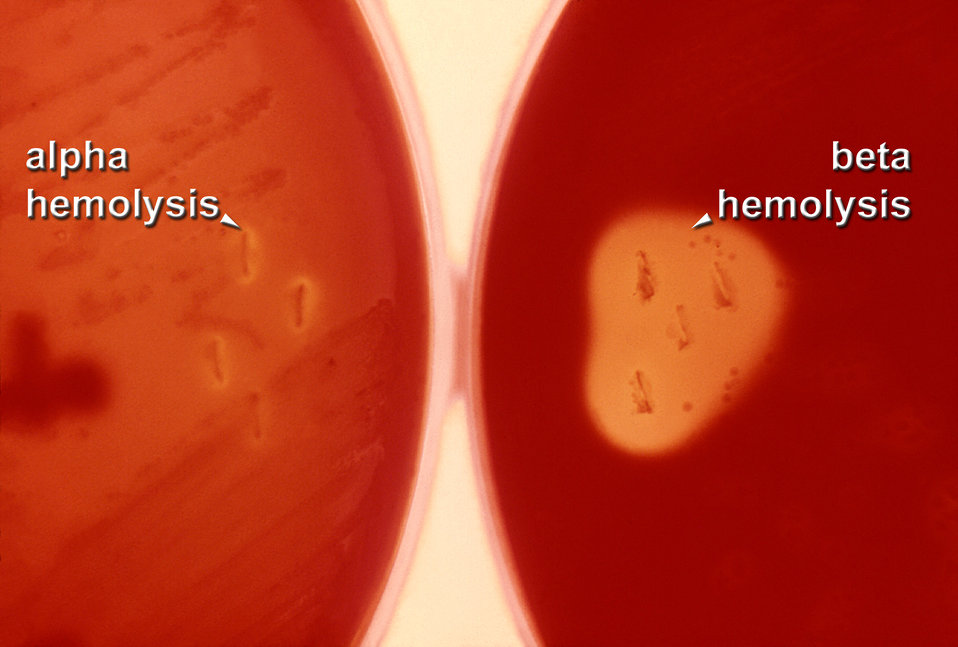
This 1977 photograph depicted two Petri dishes each filled with trypticase soy agar medium containing 5% defibrinated sheep's blood, i.e., blood agar plate (BAP). The plate on the left had been stabbed and streaked with an inoculum containing Streptococcus mitis, alpha-hemolytic bacteria, a member of the Viridans group, while the right plate was stabbed with an inoculum containing Group A Streptococcus pyogenes (GAS), a typical beta-hemolytic bacteria. The inoculation was performed using a wire loop, which had been dipped into a primary culture medium. The BAPs were incubated in a carbon dioxide enriched atmosphere at 35oC for 24 hours. There is no magnification of this image.